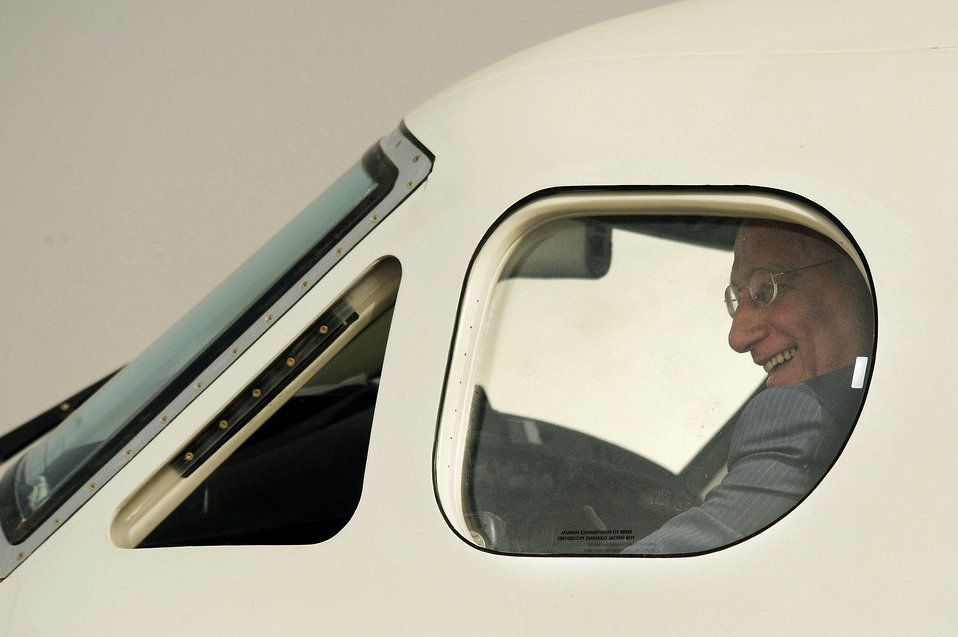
Iraqi air force acquires new aircraft from U.S. forces

Iraqi Defense Minister Abd al-Qadir al-Mufriji sits in the pilot's seat of a Cessna Caravan 208 after a ceremony celebrating the transfer of ownership of 11 U.S. Forces aircraft to the Iraqi air force at New Al Muthana Air Base, Iraq, July 9. Army Lt. Gen. Frank Helmick, commander of Multi-National Security Transition Command Iraq, signed over eight Cessna 172s and three Cessna Caravan 208s worth more than $9 million to the Iraqi Defense Minister.